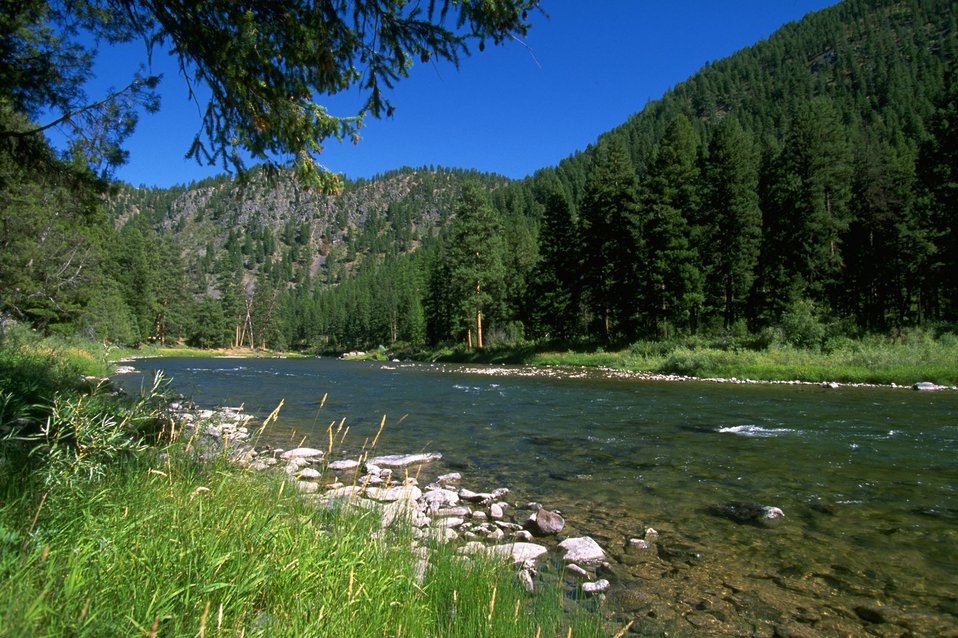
Scenic shot of Blackfoot River